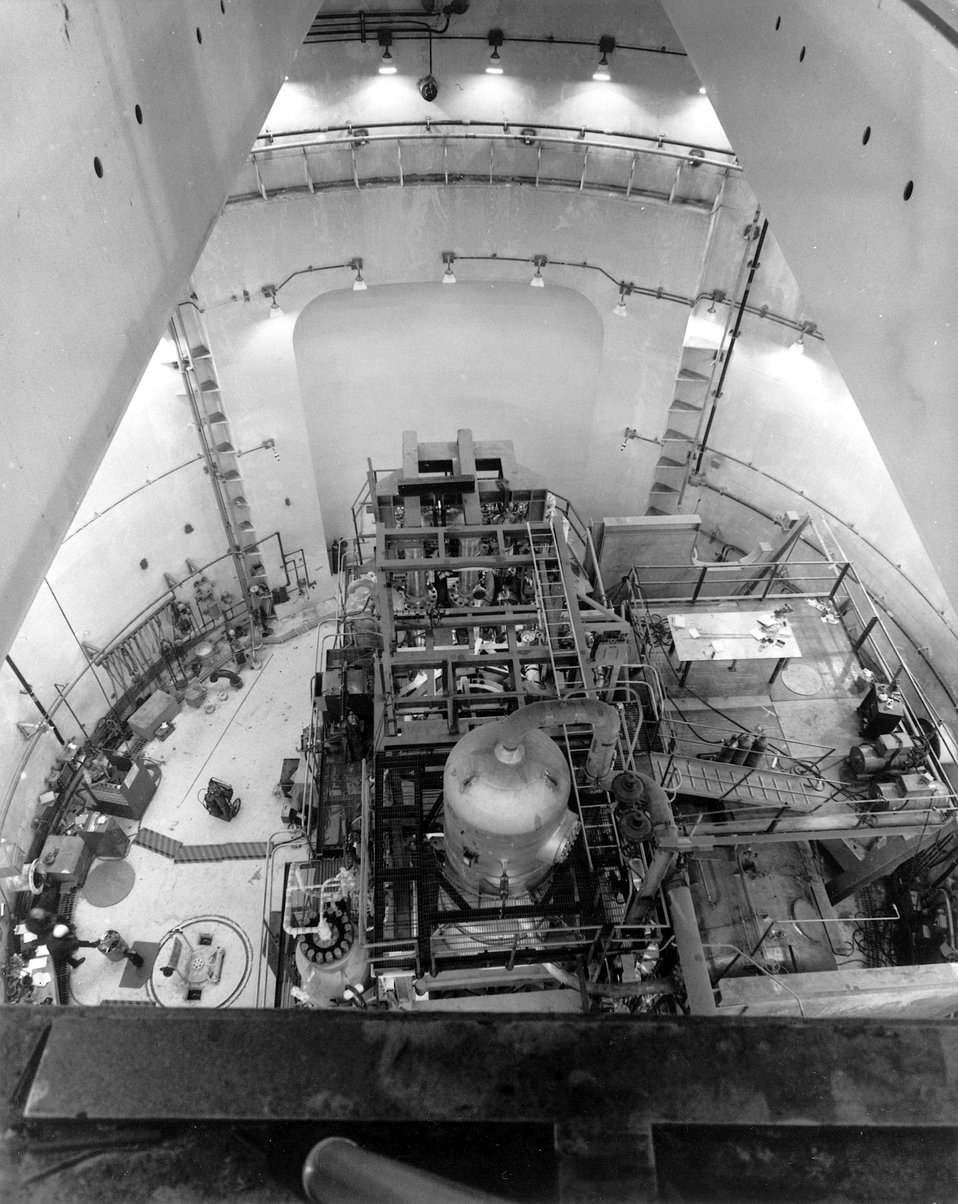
The mobile test assembly inside the Loss of Fluid Test Facility under construction at the Energy Research and Development Administration's Idaho National Engineering Laboratory. Circa 1975.